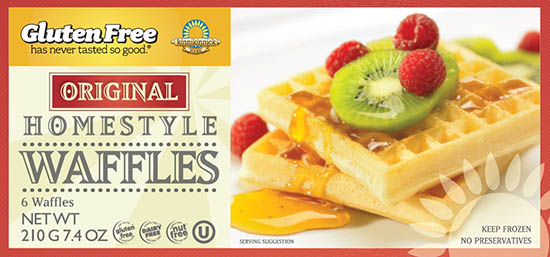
RECALLED – Waffles, Mix, Bread Crumbs

January 8, 2014 – Product Recall – Allergy Alert - Undeclared Milk in Five Kinnikinnick Foods Products.